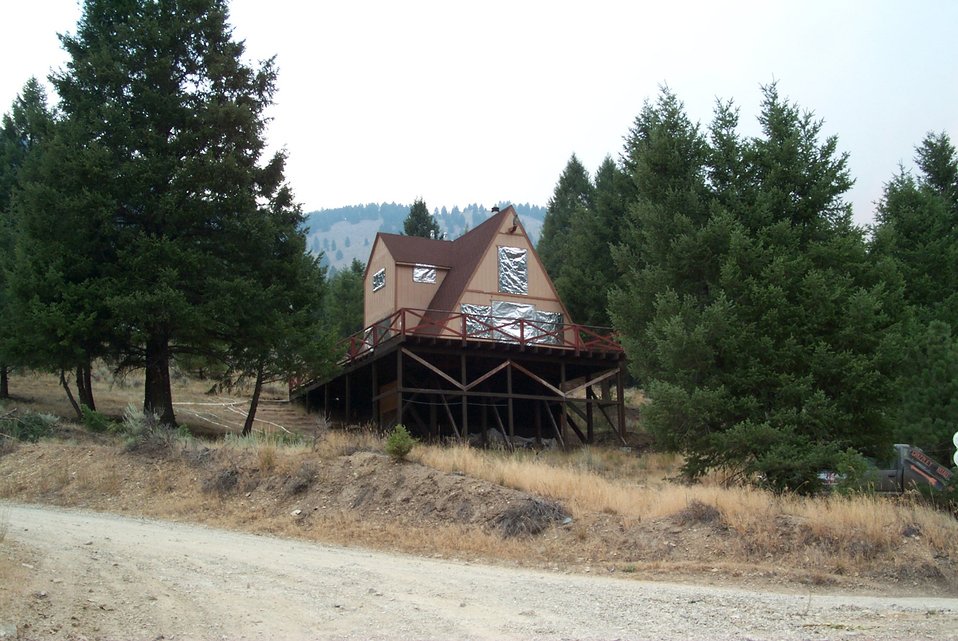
Fire retardant measures Urban interface Fire Clearwater Fire Salmon Field Office USRD Upper Snake River District